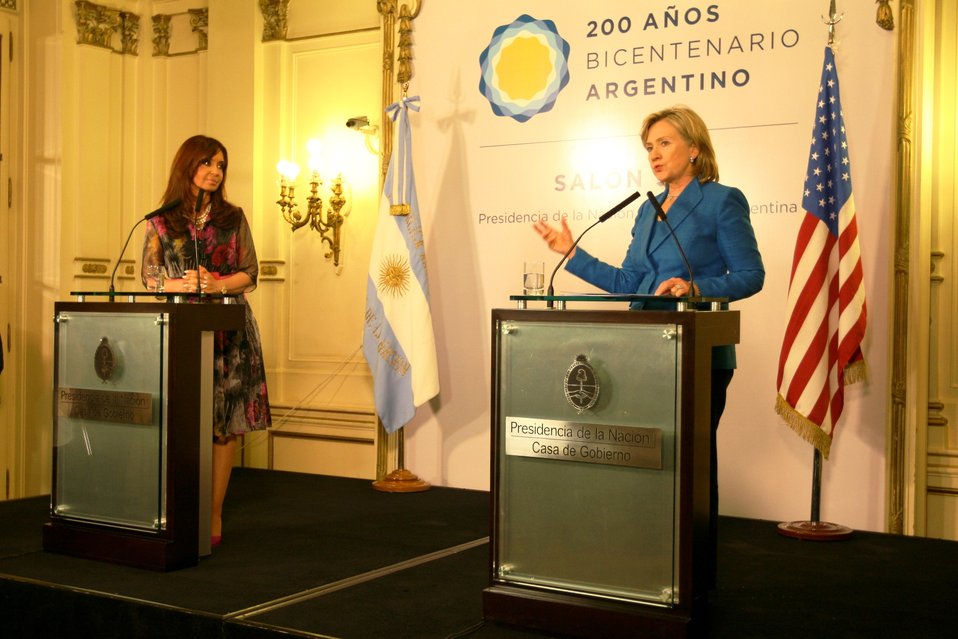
Secretary Clinton With Argentine President Cristina Fernandez de Kirchner

U.S. Secretary of State Hillary Rodham Clinton speaks at a press conference with Argentine President Cristina Fernandez de Kirchner in Buenos Aires, Argentina March 1, 2010.